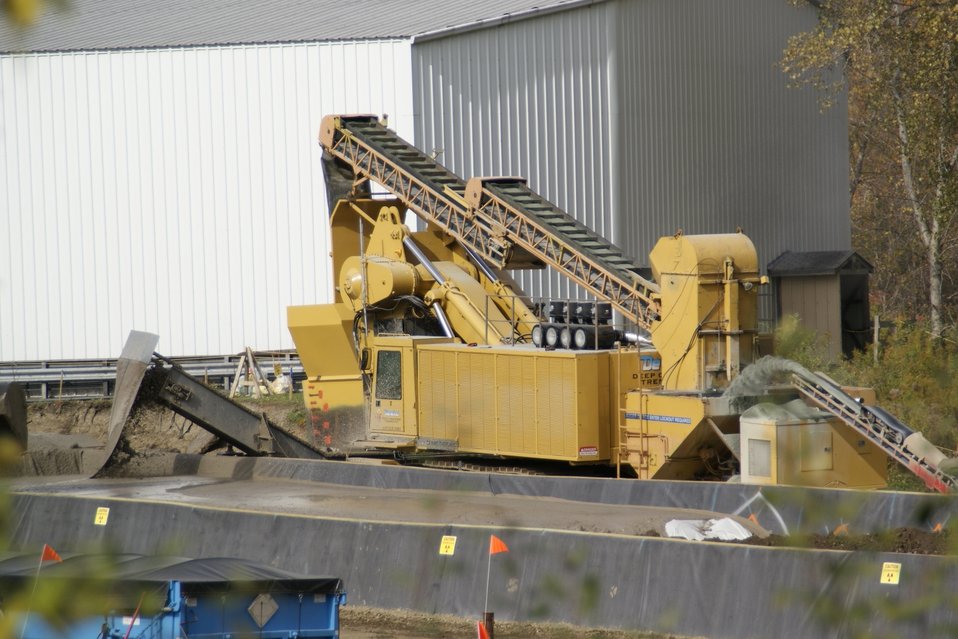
Plume Mitigation Project Breaks Ground at West Valley

A 200,000-pound one-pass trencher broke ground (2010) at the West Valley Demonstration Project in Western New York. Thanks to an infusion of funds from the American Recovery and Reinvestment Act (ARRA), the trencher is placing a Permeable Treatment Wall (PTW) on the northern portion of the site to slow the spread of a groundwater plume contaminated with Strontium-90 (Sr-90). The plume originated from a leak in a pipe in the facility used for reprocessing spent nuclear fuel during commercial operations in the 1960s.